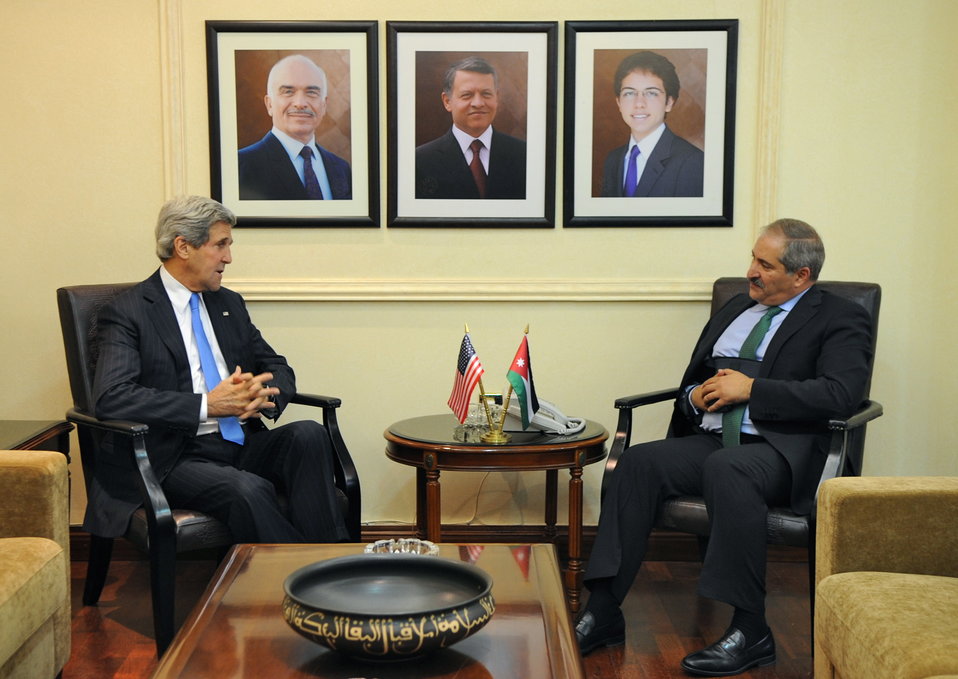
Secretary Kerry Meets With Jordanian Foreign Minister Judeh

U.S. Secretary of State John Kerry meets with Jordanian Foreign Minister Nasser Judeh in Amman, Jordan, on May 22, 2013.